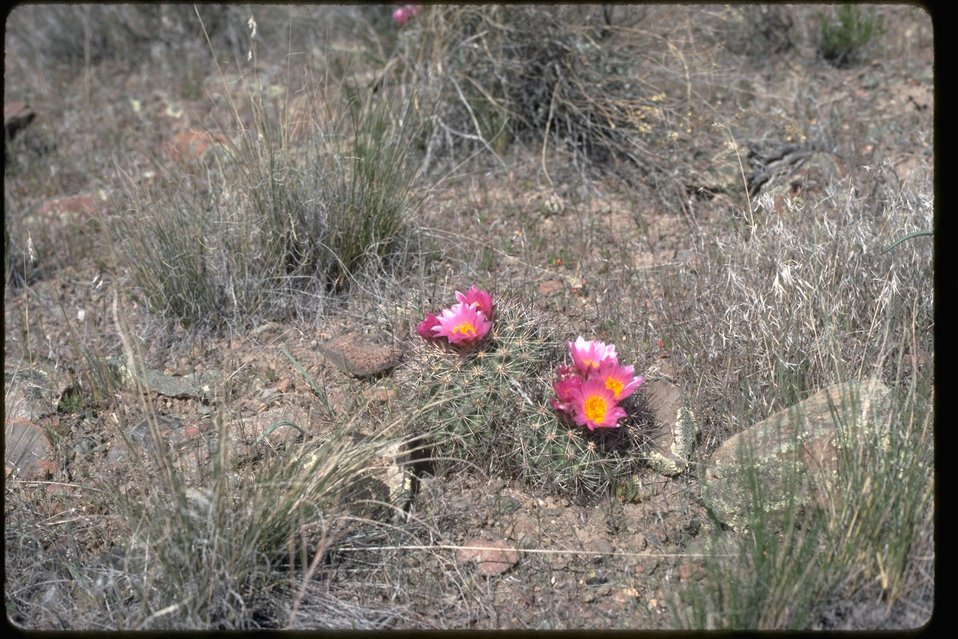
Wildflower found in the Spring Basin Wilderness Study Area. OR 5-9